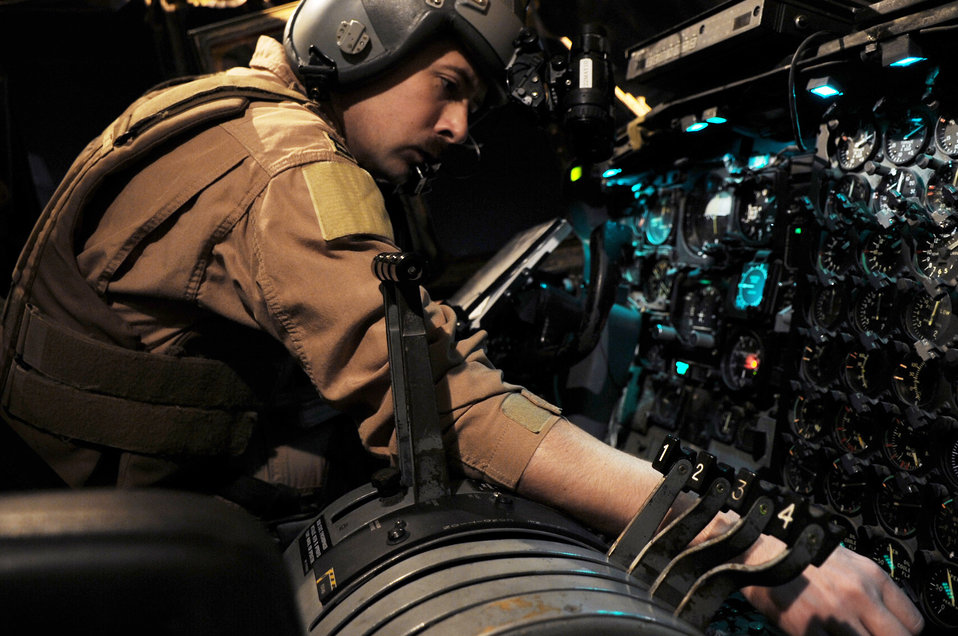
C130E completes last combat mission

Capt. David Jones does a pre-flight check of a C-130E Hercules before its last combat mission March 6, 2010, at Joint Base Balad, Iraq. Captain Jones is a copilot assigned to the 777th Expeditionary Airlift Squadron.